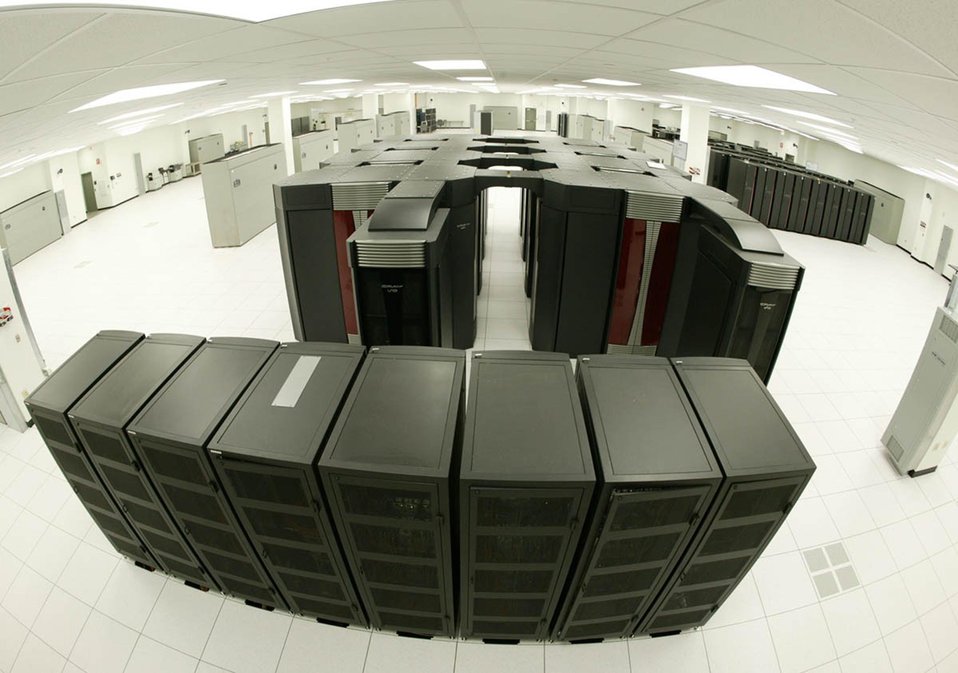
THE CENTER FOR COMPUTATIONAL SCIENCE AT OAK RIDGE NATIONAL LABORATORY.

ORNL'S CENTER FOR COMPUTATIONAL SCIENCE HAS 40,000 SQUARE FEET OF SPACE FOR COMPUTER SYSTEMS AND DATA STORAGE. THE DEPARTMENT OF ENERGY SELECTED ORNL AND ITS DEVELOPMENT PARTNERS, CRAY INC., IBM CORP., AND SILICON GRAPHICS INC. TO RECEIVE A GRANT TO BUILD A 50 TERAFLOP (50 TRILLION CALCULATIONS PER SECOND) SCIENCE RESEARCH COMPUTER THAT WILL BE HOUSED IN THIS FACILITY.